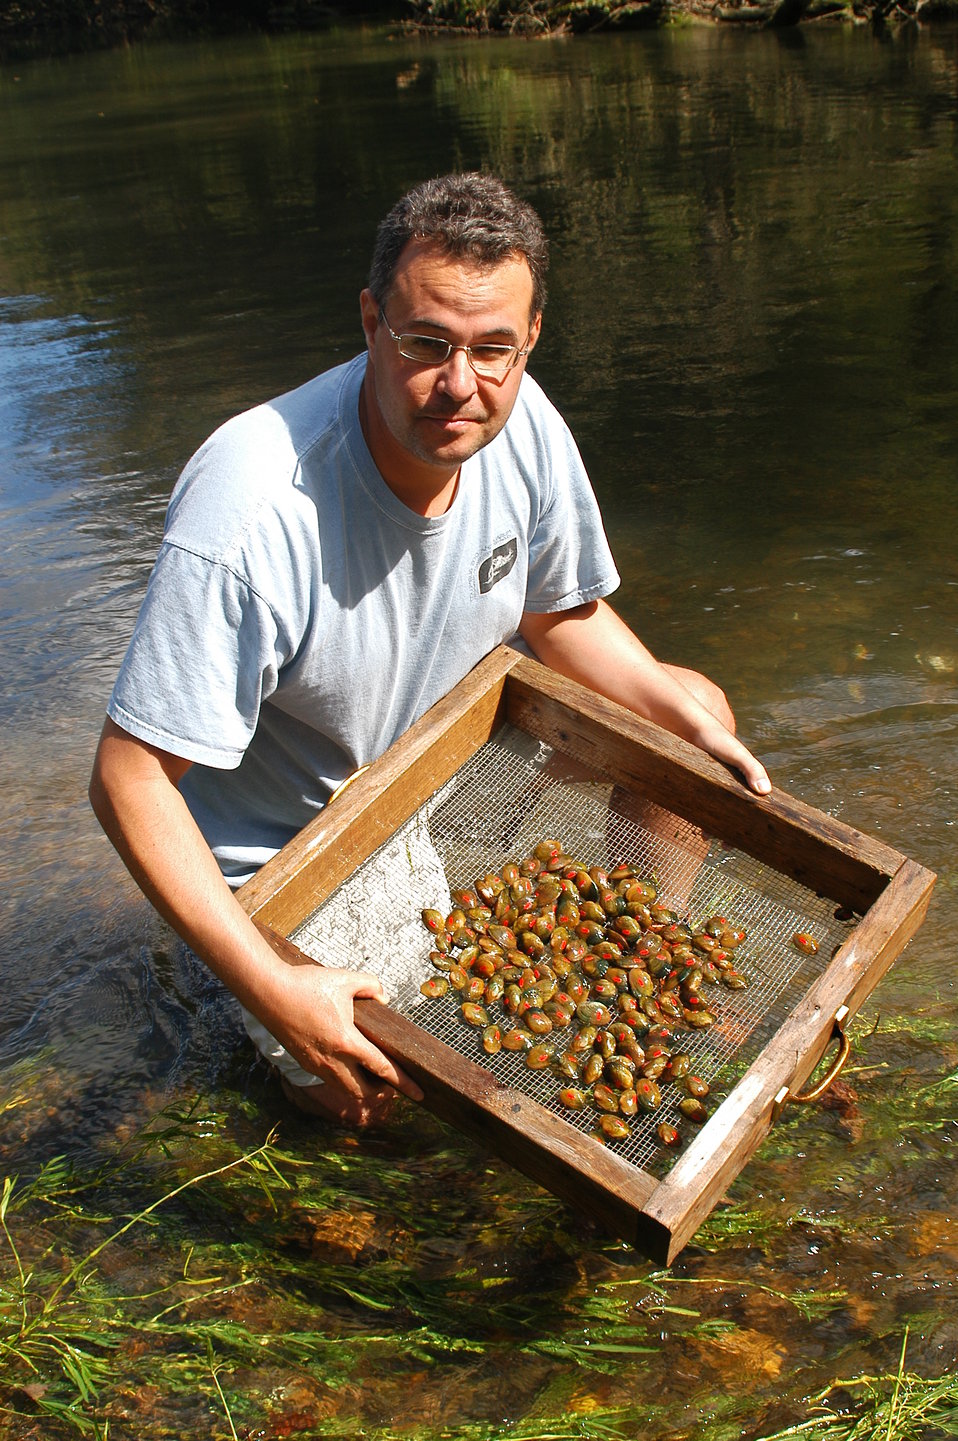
Jess Jones

Releasing endangered oyster mussels (Epioblasma capsaeformis) in the upper Clinch River in Virginia at Cleveland Islands in 2006

Rachel Carson Award for Scientific Excellence (Individual) – 2013